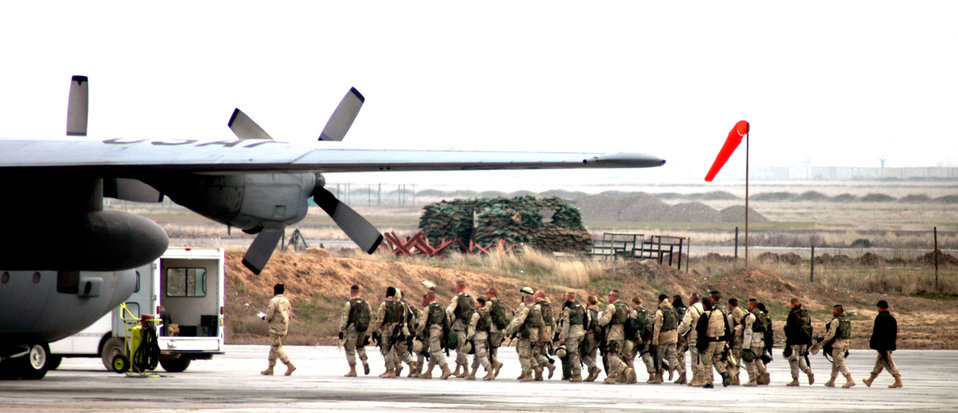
Air terminal operators keep OEF freight, passengers moving

KARSHI-KHANABAD AIR BASE, Uzbekistan -- Army troops follow an Airman of the 416th Expeditionary Mission Support Squadron's Air Terminal Operations Center as they walk across the flightline on their way to a C-130 Hercules to fly to a forward-deployed location supporting Operation Enduring Freedom.